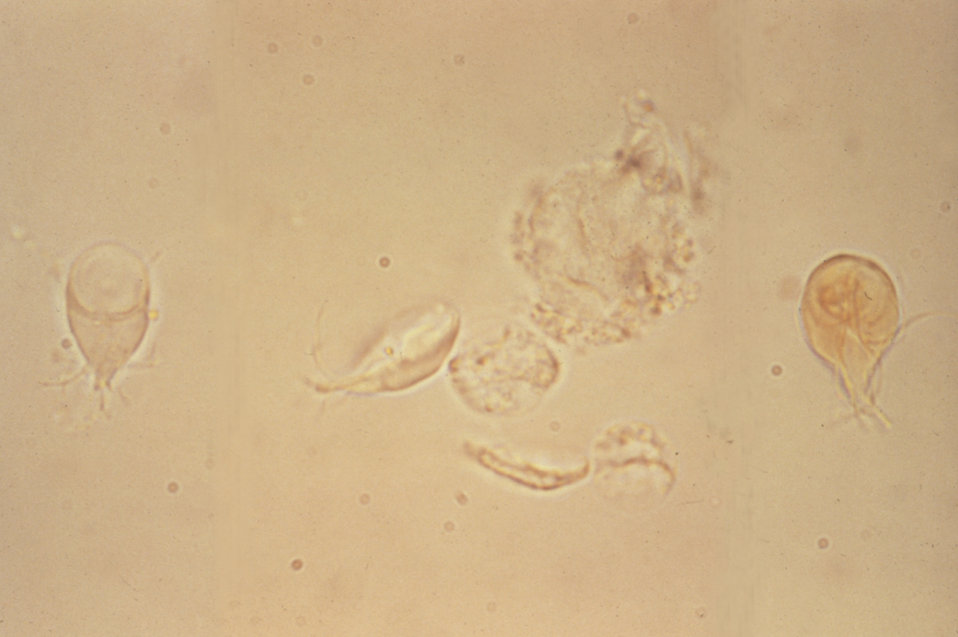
This photomicrograph reveals Giardia lamblia trophozoites that can be found in the small intestine of an infected host.